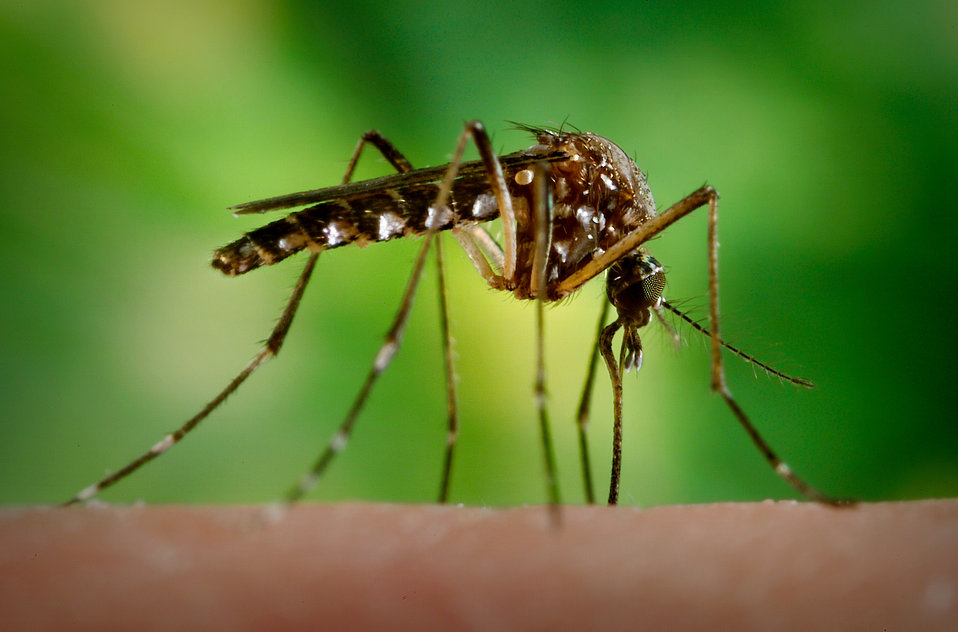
This 2006 photograph depicted a female Aedes aegypti mosquito as she was in the process of beginning the process of acquiring a blood meal from its human host, after having penetrated the skin surface with the sharply-pointed "fascicle". Normally, this female would be obtaining her blood from an unsuspecting host, but in this case, the CDC's biomedical photographer, James Gathany, had volunteered his own hand in order to entice the insect to alight, and feed. As it would fill with blood, the abdomen would become distended, thereby, stretching the exterior exoskeletal surface, causing it to become transparent, and allowing the collecting blood to become visible as an enlarging red mass. See PHIL # #8923, for this mosquito's appearance in its abdominally-distended state.